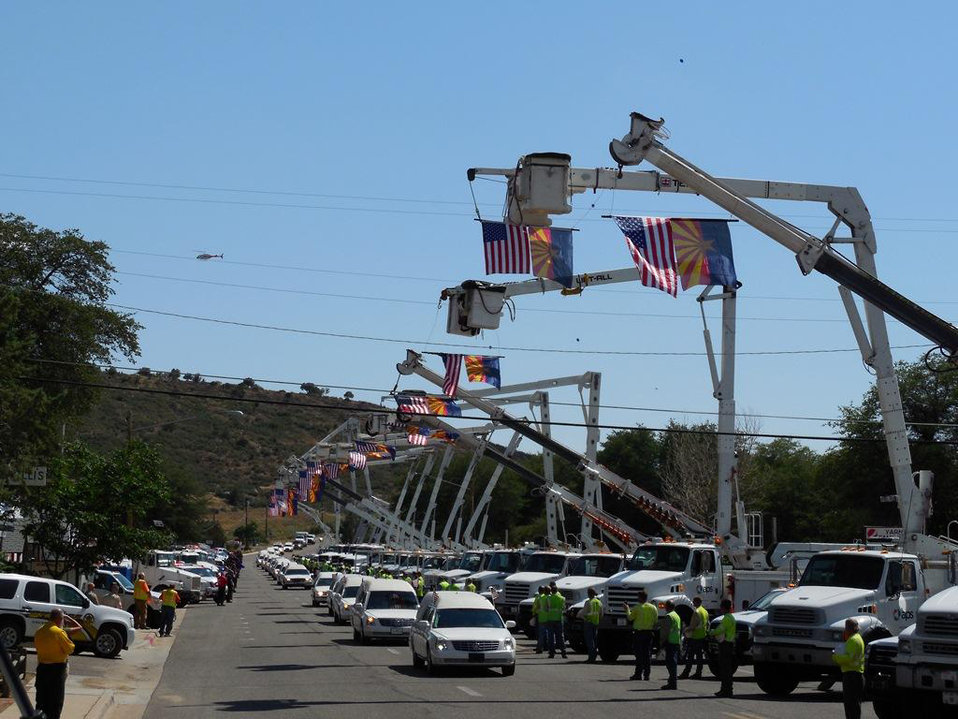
The funeral procession of the Granite Mountain Interagency Hotshot firefighters who lost their lives suppressing the Yarnell Fire passes through Yarnell, AZ on Jul. 9, 2013. Nineteen members of the Prescott-based crew died on Jun. 30, 2013, when the fire grew out of control from gusty winds and overran their position. The Yarnell Fire is the deadliest wildfire for firefighters in the U.S. in decades.